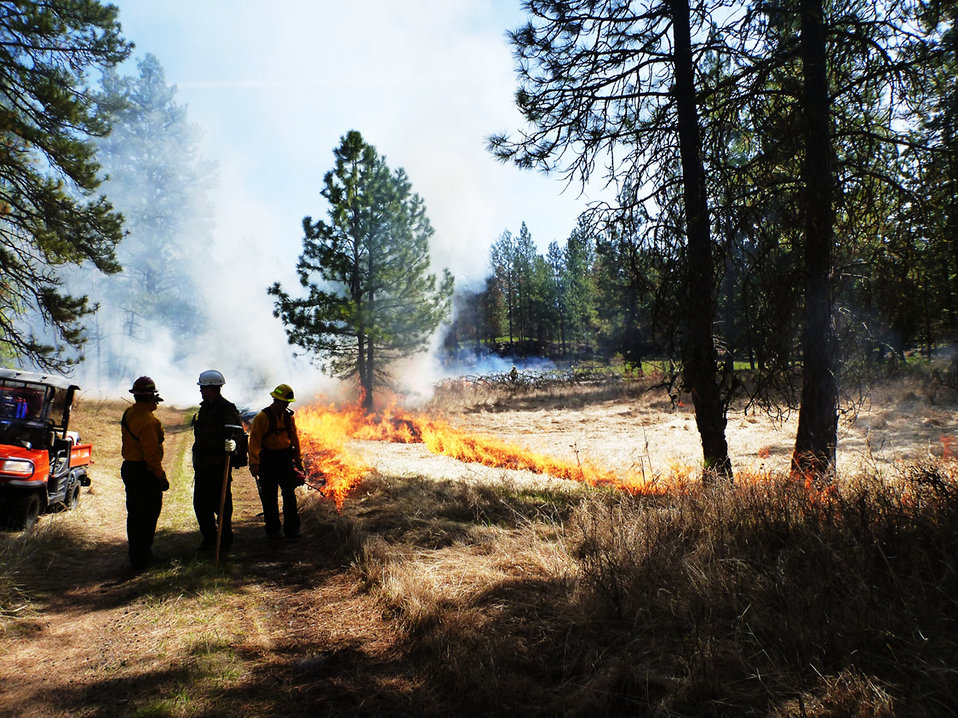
Lighting and Holding

Here, federal and city cooperators participate in lighting and holding the prescribed fire along the project boundary.